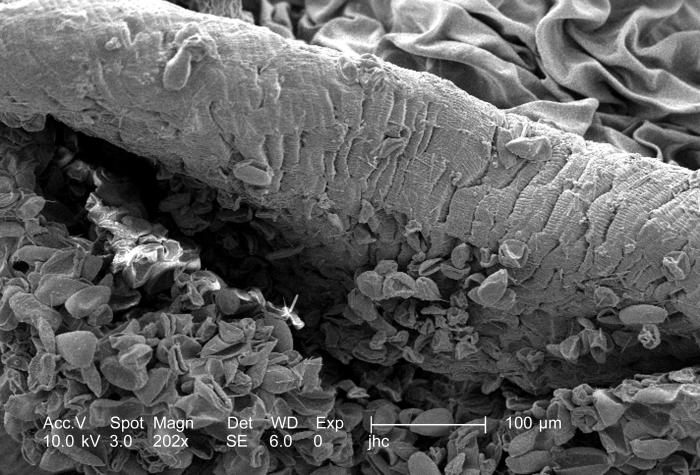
Magnified 202x, this scanning electron micrograph (SEM) revealed some of the morphologic ultrastructure found on the petal of an unidentified specie of "spiderwort" flower, Tradescantia sp.. Note the myriad of textures comprising the petal's surface, a structure that is actually a modified leaf.